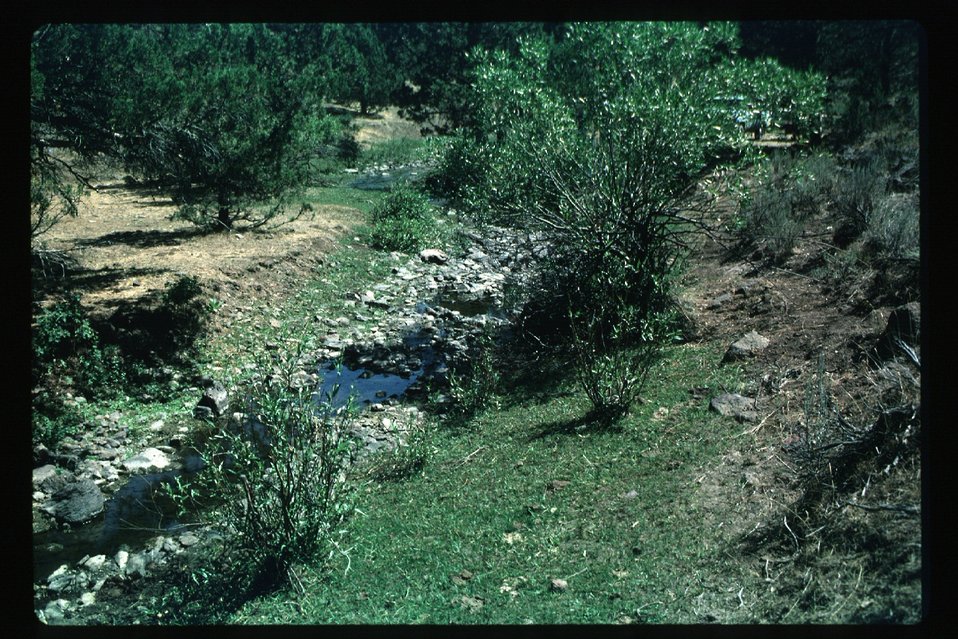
Riparian area Heavy use along a Riparian area LSRD Lower Snake River District